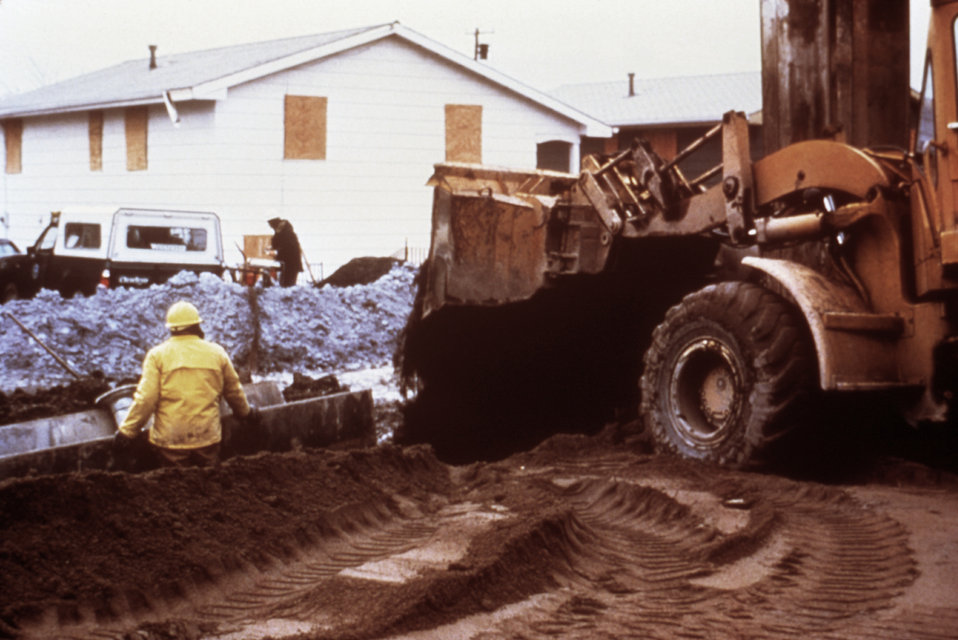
This photograph was taken during cleanup efforts after toxic waste was detected in a New York neighborhood called Love Canal.